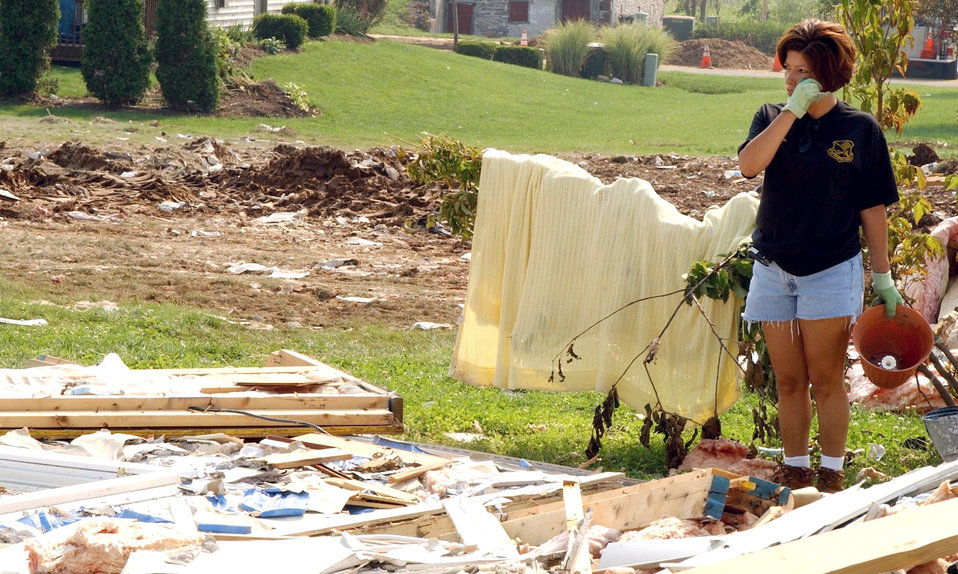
Aftermath of destruction

CAMPBELLTOWN, Pa. - Master Sergeant Regina Stotlzfus pauses to survey the devastation at what is left of a home belonging to Senior Master Sgt. John Stewart, an Air National Guardsmen with the 193rd Special Operations Wing at Middletown, Pa. A tornado packing 200 mph winds destroyed the home July 14. Sergeant Stotlzfus, the wing's first sergeant, joined other wing Airmen to help clean up.